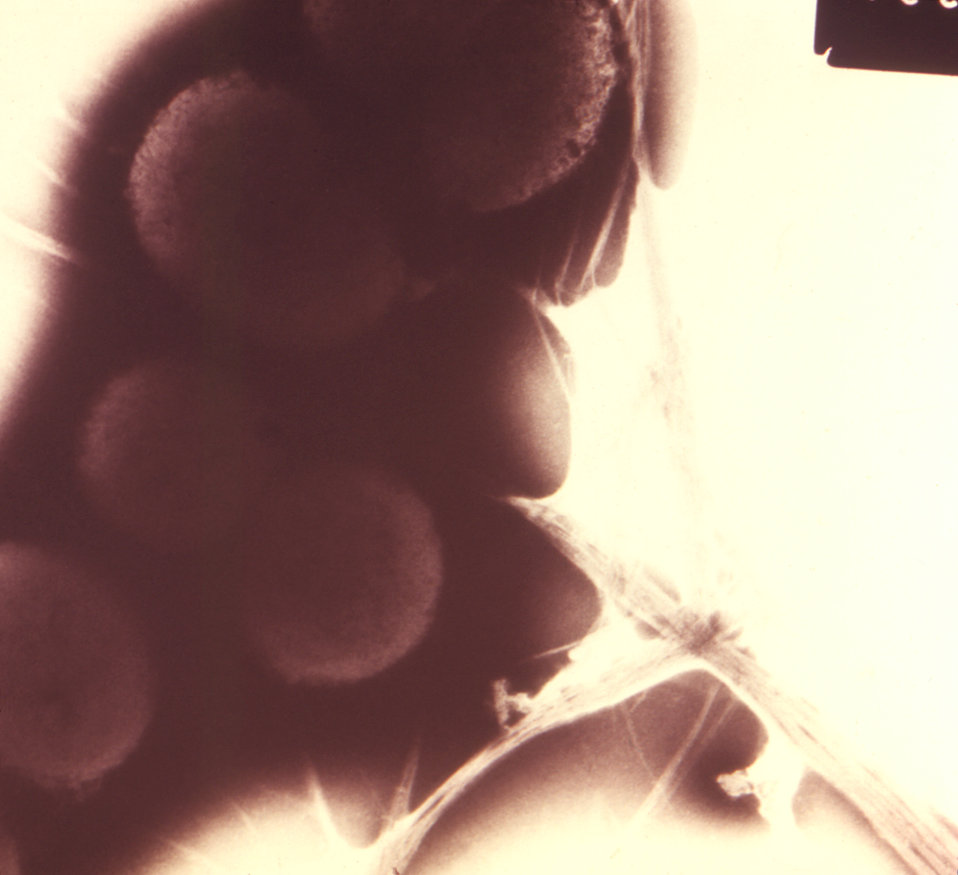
This scanning electron micrograph (SEM) depicted a number of spherical-shaped Neisseria gonorrhoeae diplococcal bacteria.